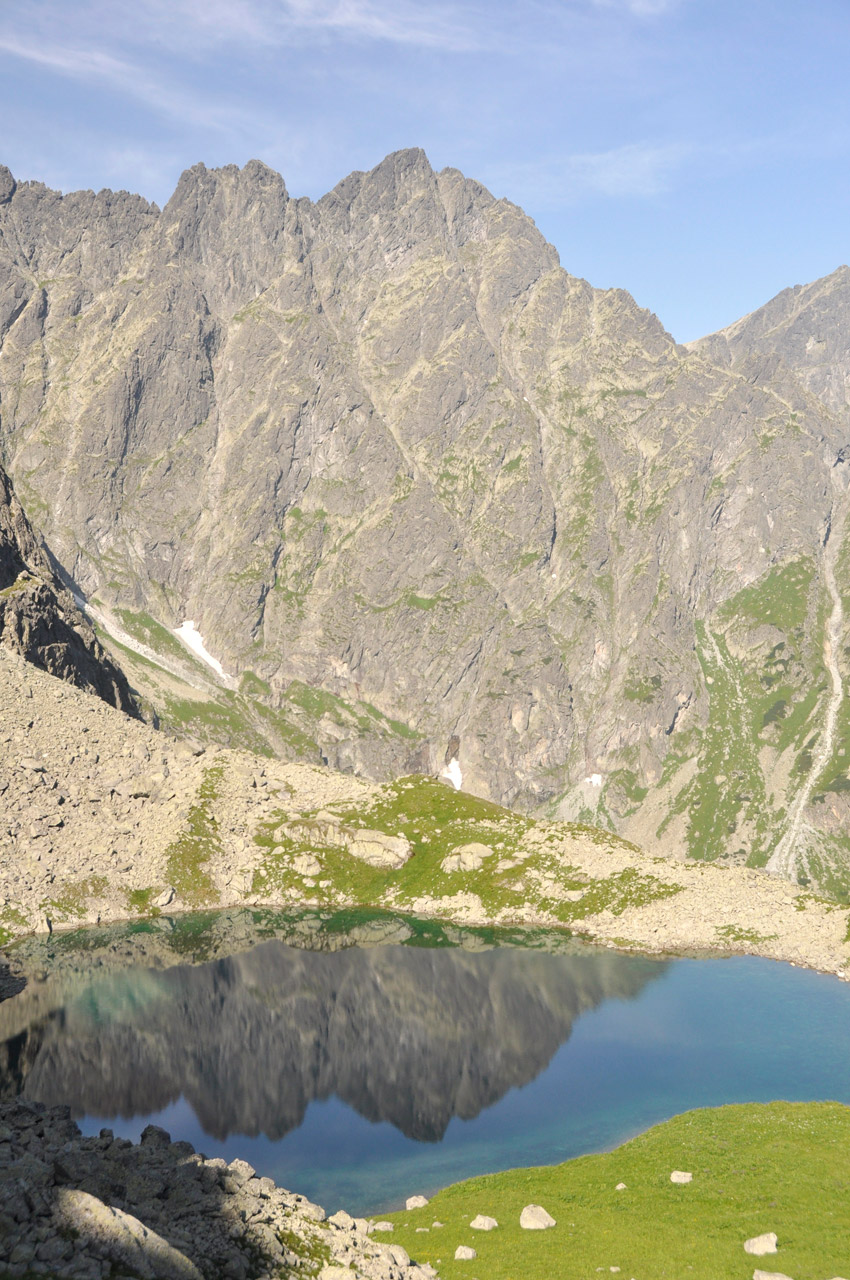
Tatry

Duck pond in the mountains.